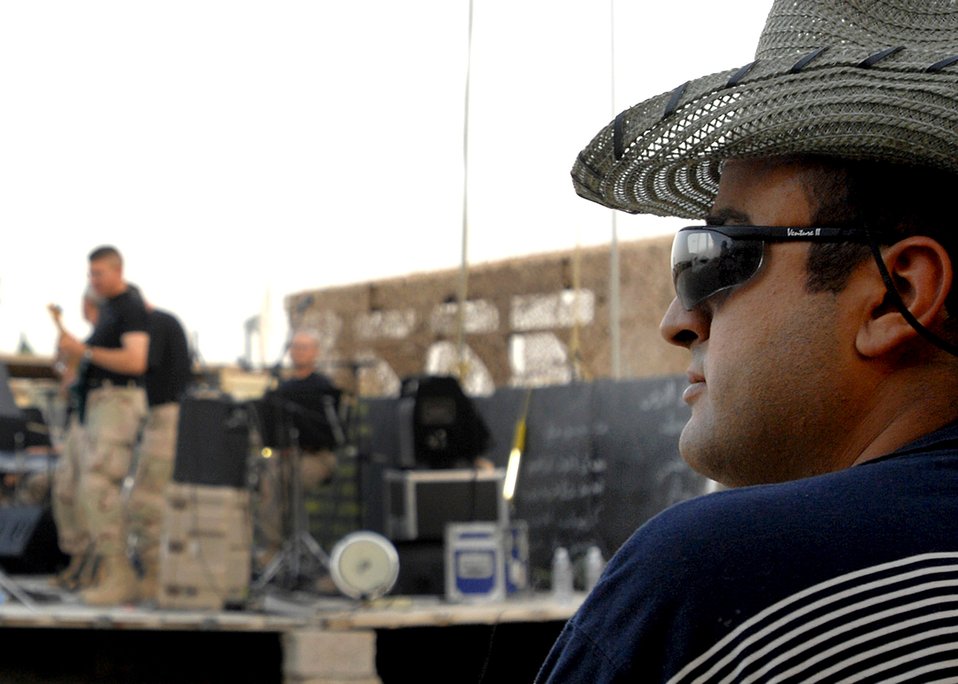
On tour in the AOR

Muhammed, an Iraqi worker at Forward Operating Base McHenry, Iraq, enjoys the music of the U.S. Central Command Air Forces Band